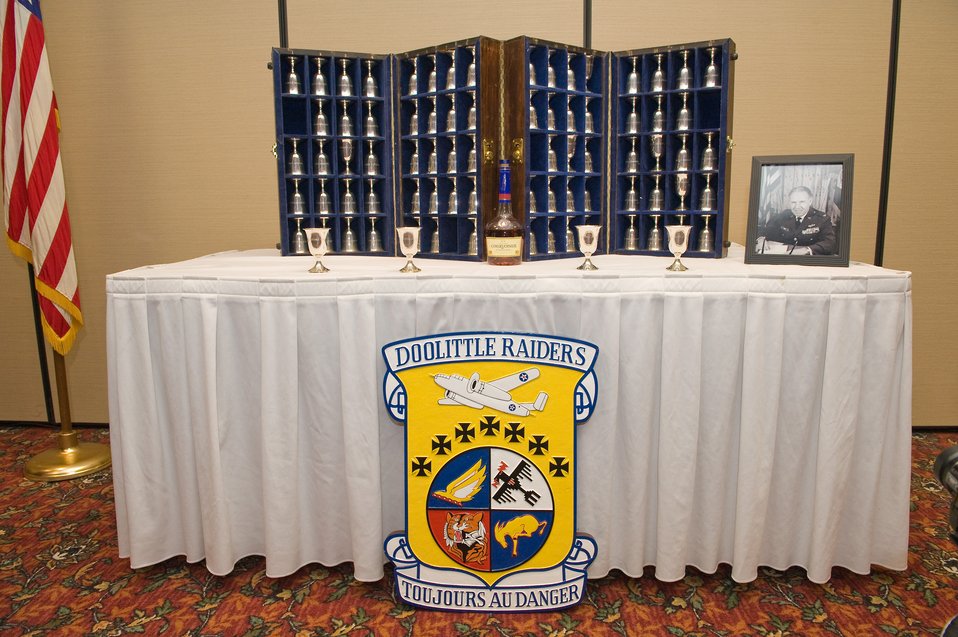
Doolittle Tokyo Raiders' Goblet Ceremony

Goblets for Doolittle Raiders (left-right) Master Sgt. David J. Thatcher, Lt. Col. Richard E. Cole, Major Thomas Griffin, and Lt. Col. Robert L. Hite stand charged and ready for the Goblet Ceremony on April 16, 2010 in Fairborn, Ohio. The ceremony honors all who participated in the Doolittle Raid on Tokyo during W.W. II. The upright goblets represent aircrew who have survived to this day. This ceremony also honored the passing of Col. James H. Macia, Jr. (seen in framed photo). During the ceremony the name of every person was read and a Doolittle Raider responds to indicate the spirit of those who passed are present. The collection of goblets, each with an aircrew name engraved both right side up and upside down. The set of goblets is now maintained by the National Museum of the U.S. Air Force.